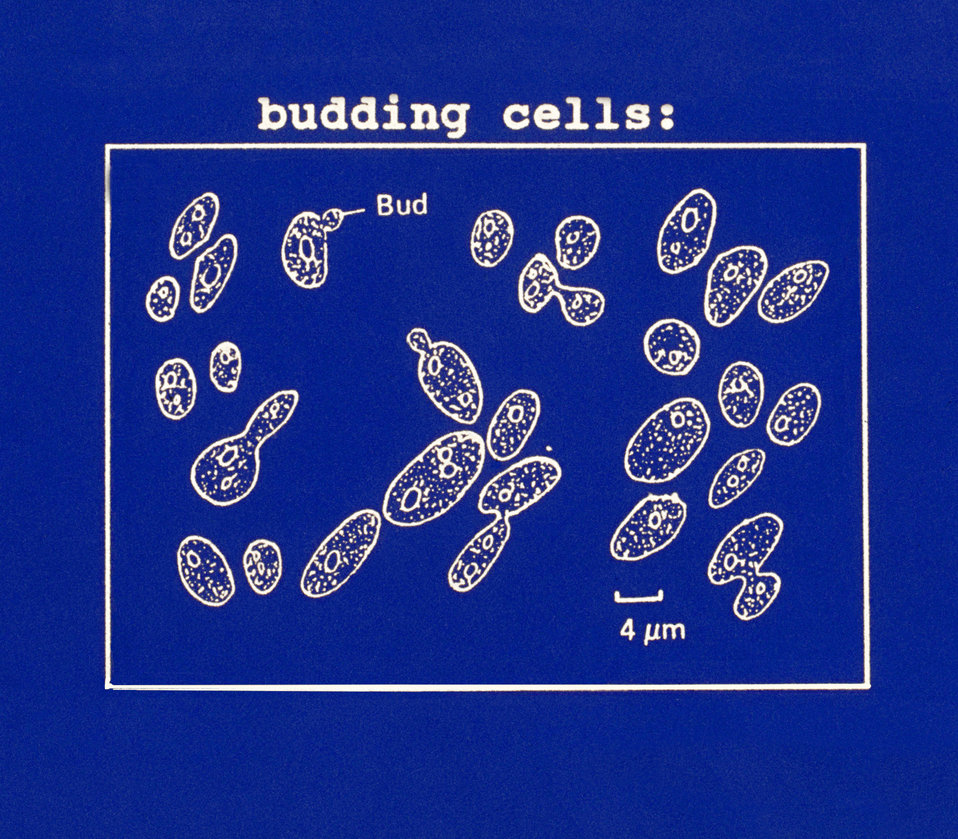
Illustration of asexual reproduction in ascomycetes: budding yeast (blastoconidia).